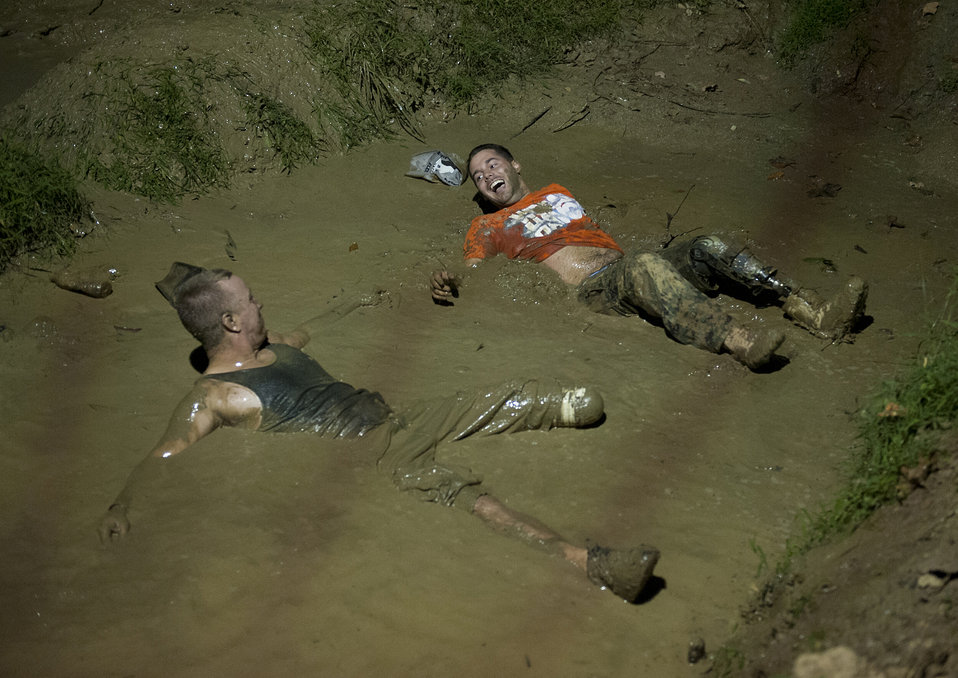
Wounded Warrior Care

Army Sgt. James Nickelson, left, and U.S. Marine Corps Lance Cpl. John Patterson shares a laugh as they lie in a mud pit during a mud bogging competition of the Big Dog Off-Road event in Gore, Va., Sept. 15, 2012. Nickelson is with Battle Company, Warrior Transition Battalion, Bethesda, Md. and Patterson is with the 3rd Battalion, 9th Marine Regiment, Camp Lejeune, N.C.